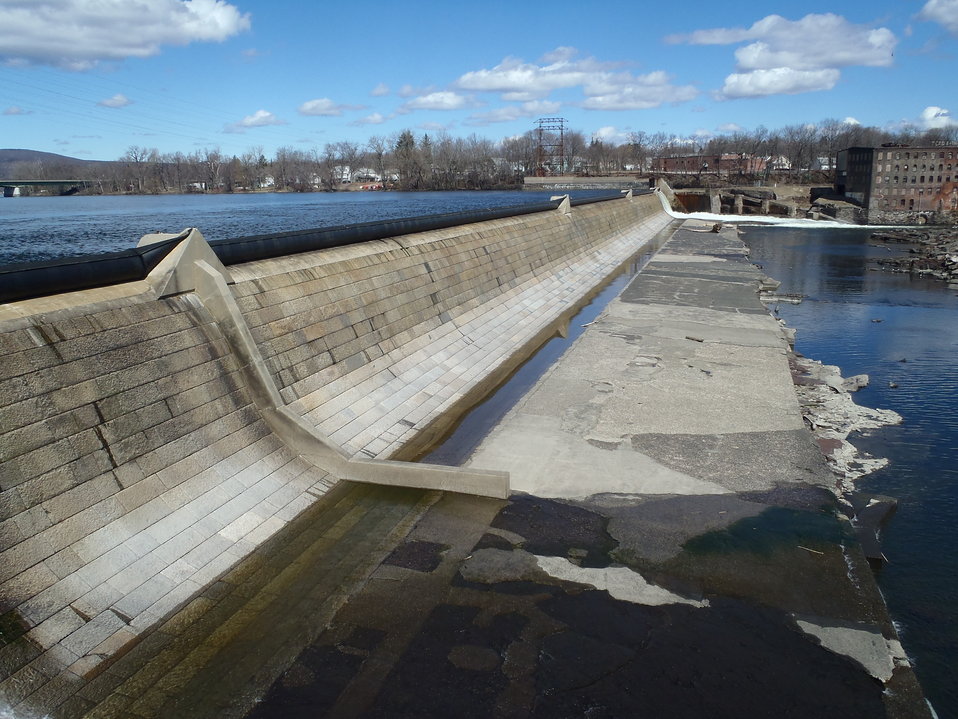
Large dams are barriers to fish